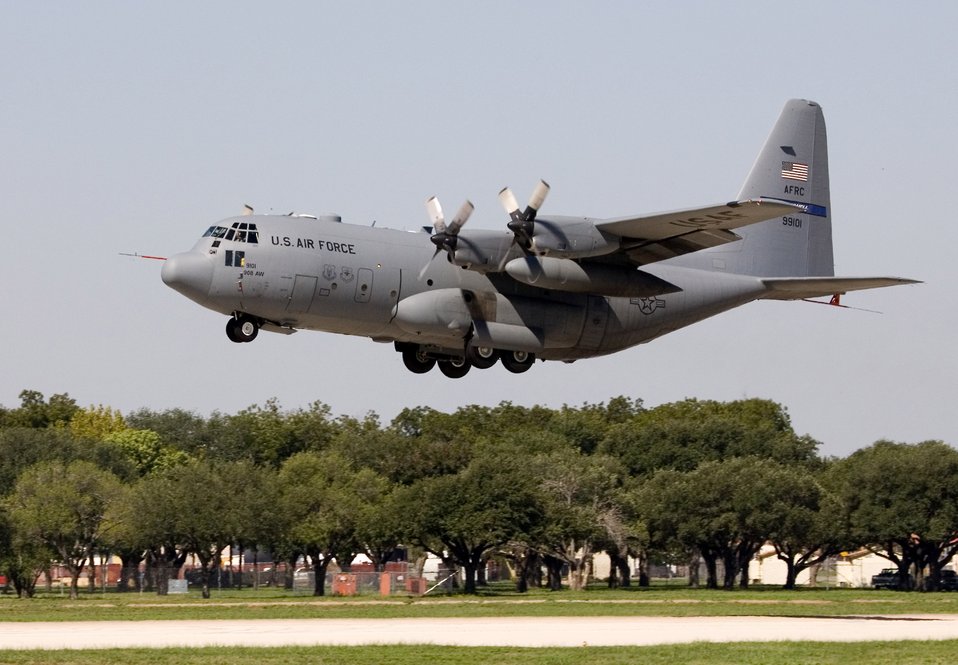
C-130 AMP flies for first time

A specially modified C-130 Hercules takes off from Lackland Air Force Base, Texas, Sept. 19, for its initial test flight. The Hercules was modified under the C-130 Avionics Modernization Program which included a comprehensive upgrade of the avionics system that increases situational awareness for the warfighter tenfold over old analog cockpits, dramatically increasing information available to aircrews at a glance, simplifying tasks and decreasing workload.